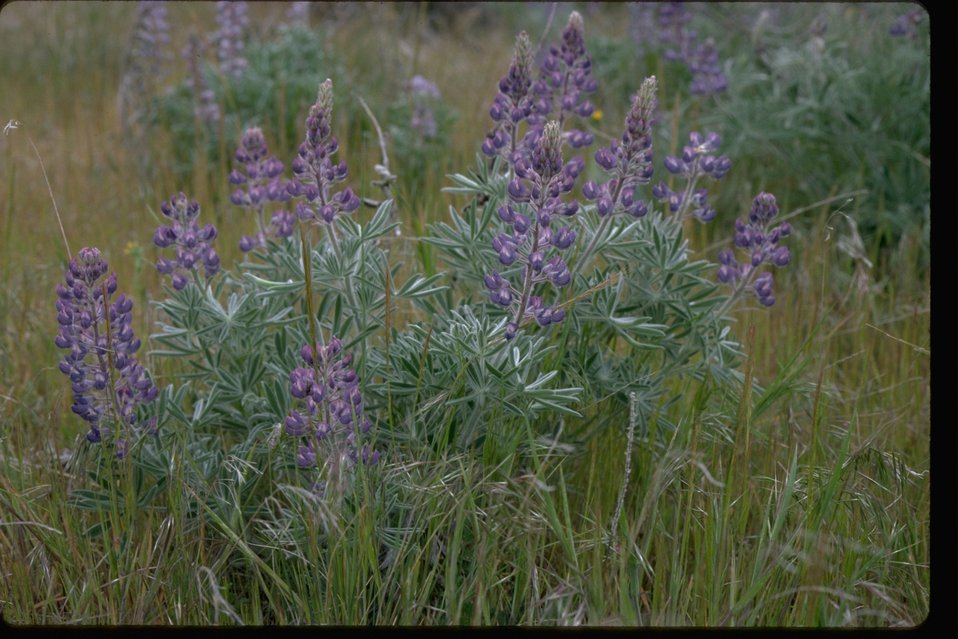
Lupinus Sulphureus